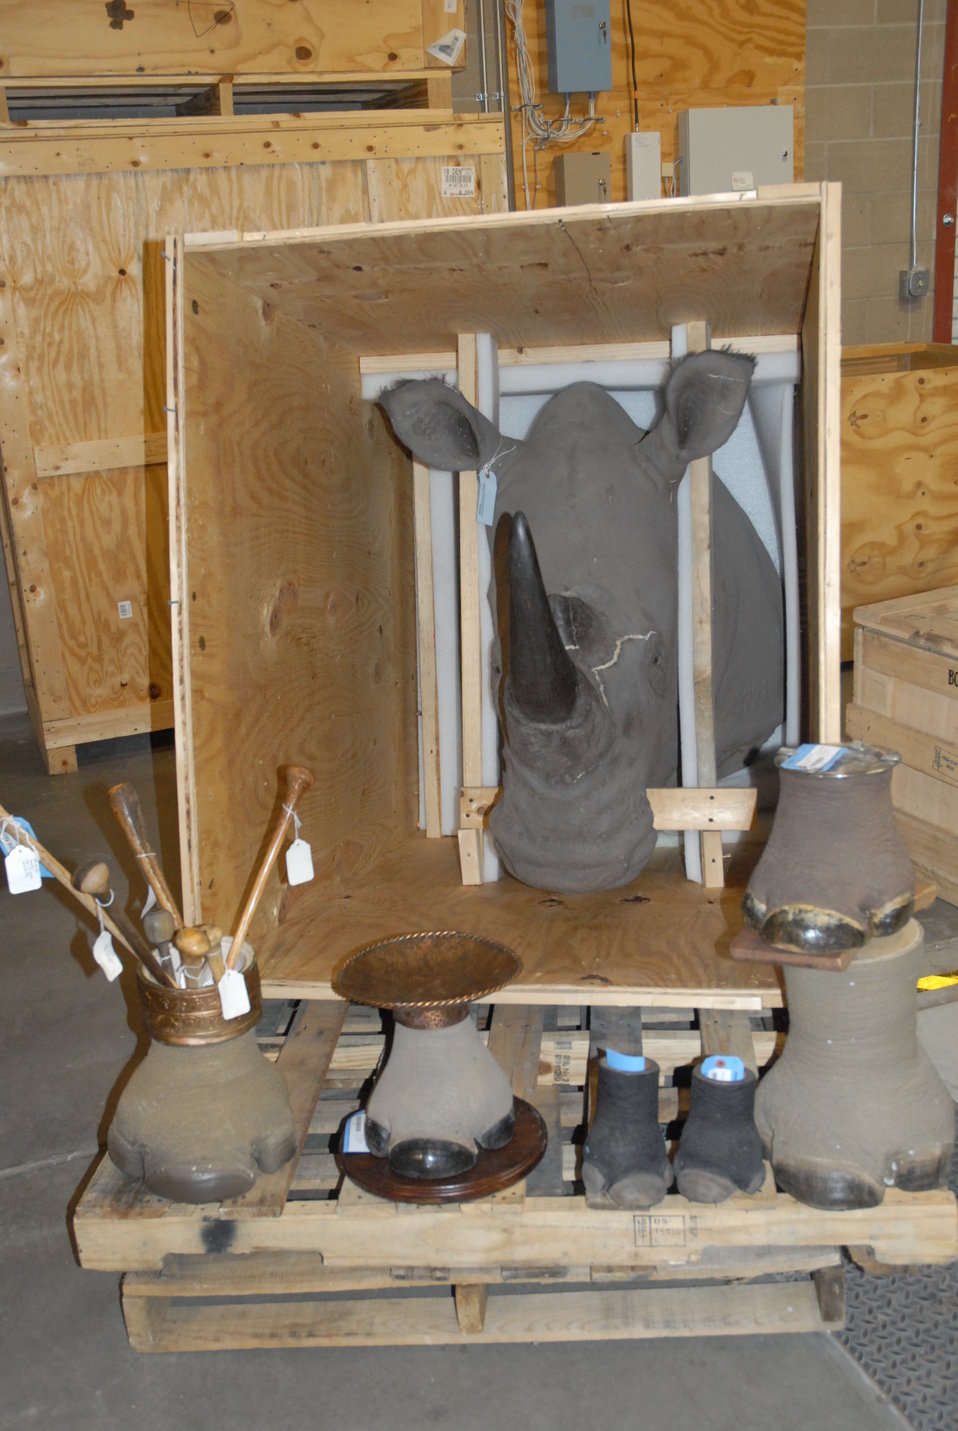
Many other items besides ivory are held at the repository